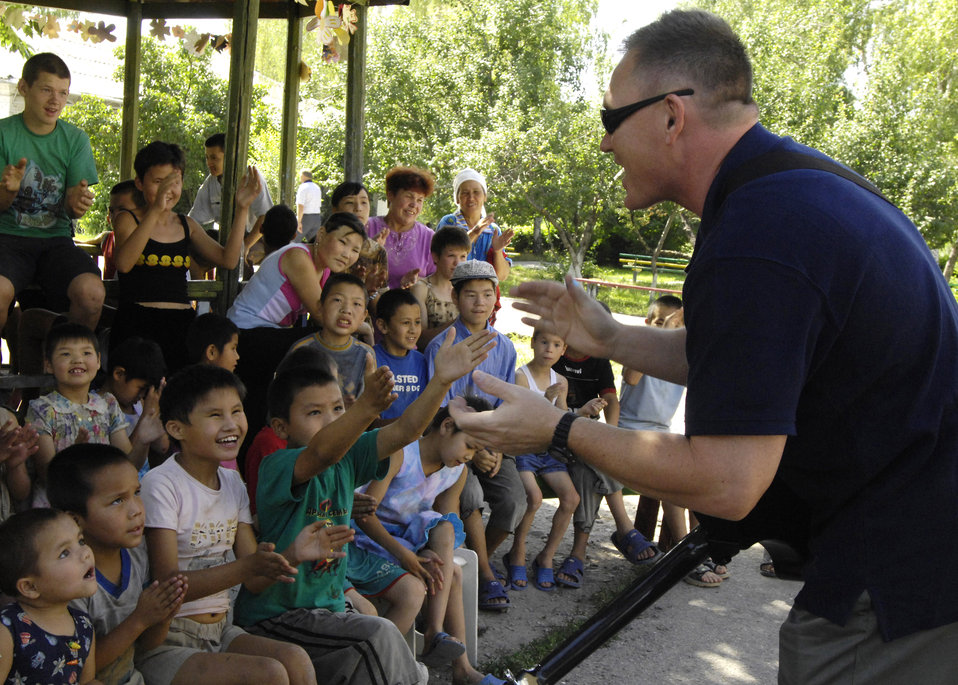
Special concert for some special children

Senior Master Sgt. James Weber meets with children of the Belovodosky Orphanage June 14 in Kyrgyzstan. Sergeant Weber is a guitar player and vocalist for the U.S. Air Forces Central Band Falcon who performed at the orphanage.